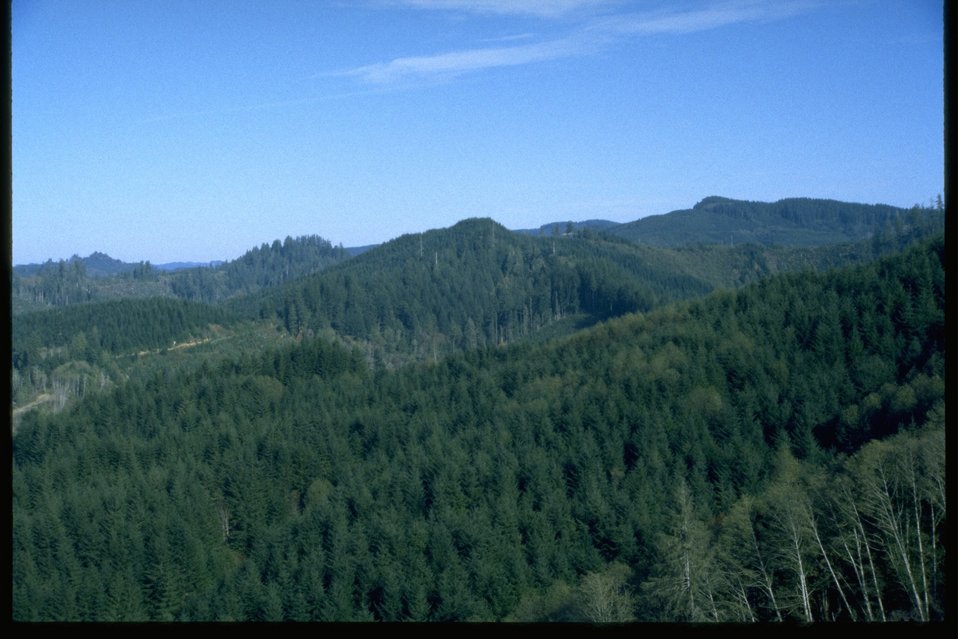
Blue Ridge looking East.